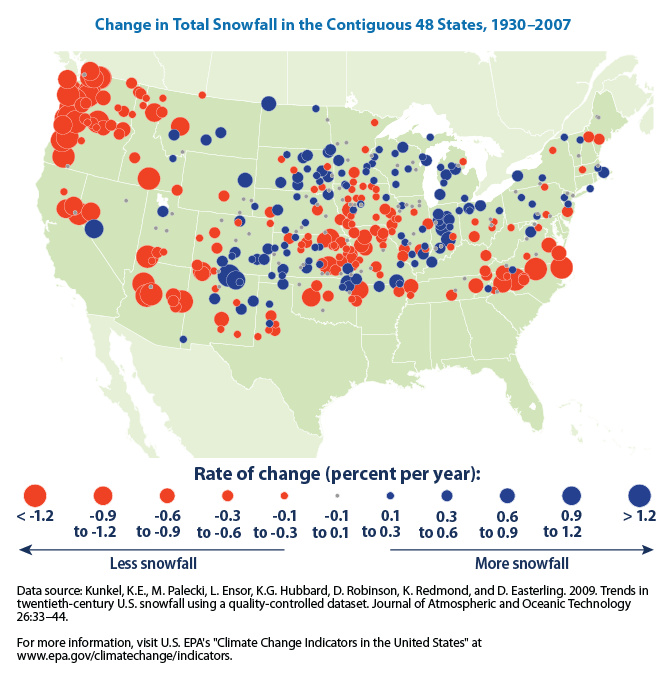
Climate Change Indicators - Changes in Total Snowfall

Climate change can alter the Earth’s snow and ice covered areas. Total snowfall has decreased in most parts of the U.S.